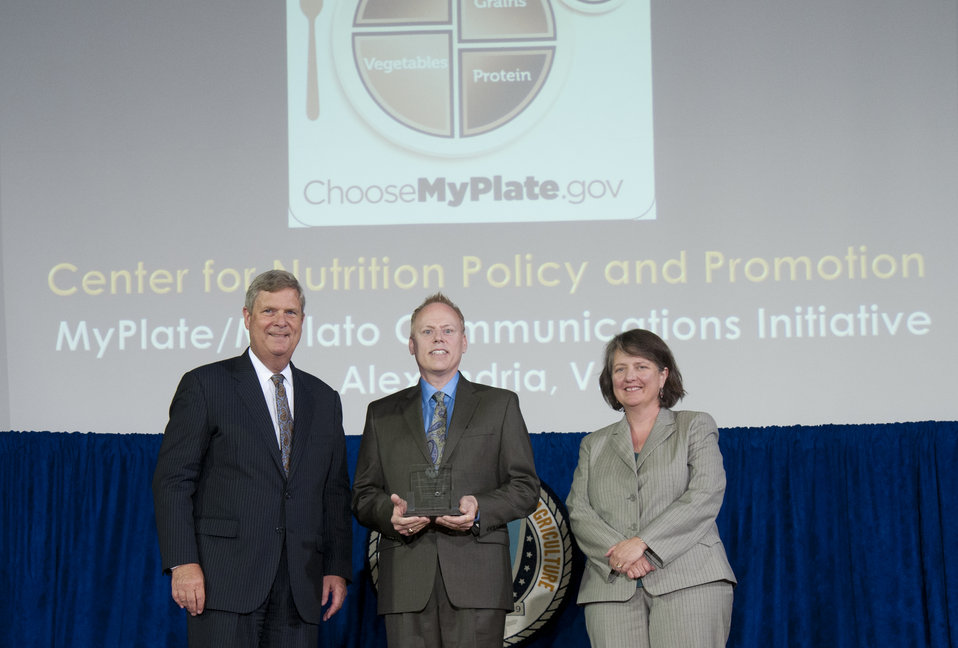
Agriculture Secretary Tom Vilsack and Agriculture Deputy Secretary Kathleen Merrigan present the Secretary’s Honor Award to MyPlate/MiPlato Communications Initiative Center for Nutrition Policy and Promotion (CNPP) group leader Robert C. Post at the U.S. Department of Agriculture (USDA) 64th Annual Honor Awards Ceremony in Washington, D.C. on Wednesday, Sept. 12, 2012. MyPlate/MiPlato Communications Initiative planned, designed, created, launched, and implemented the new USDA MyPlate/MiPlato communications initiative to encourage healthy eating and lifestyles based on the Dietary Guidelines for Americans.